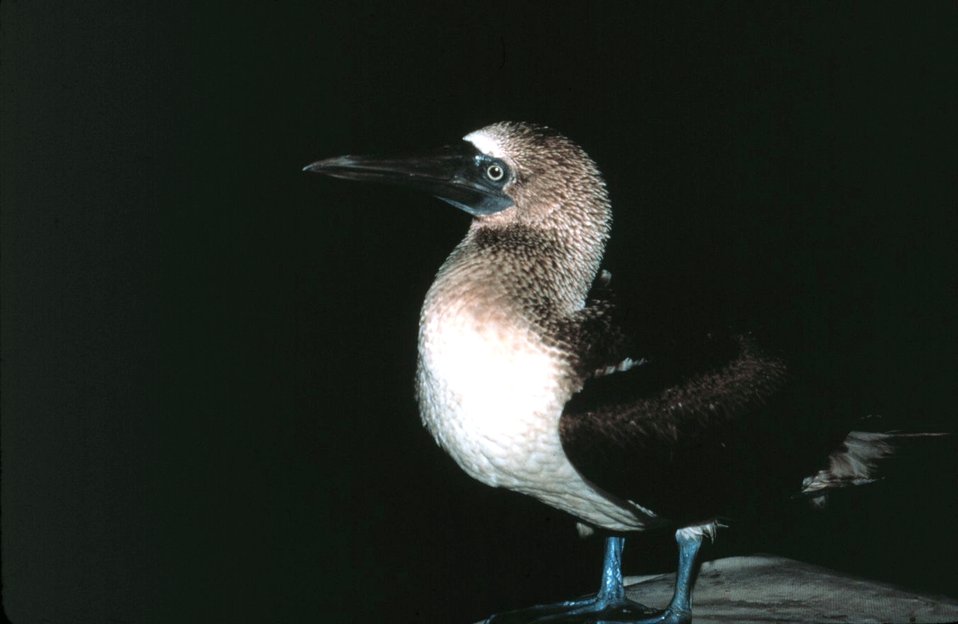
A blue-footed booby stops for a rest on the NOAA Ship RESEARCHER.